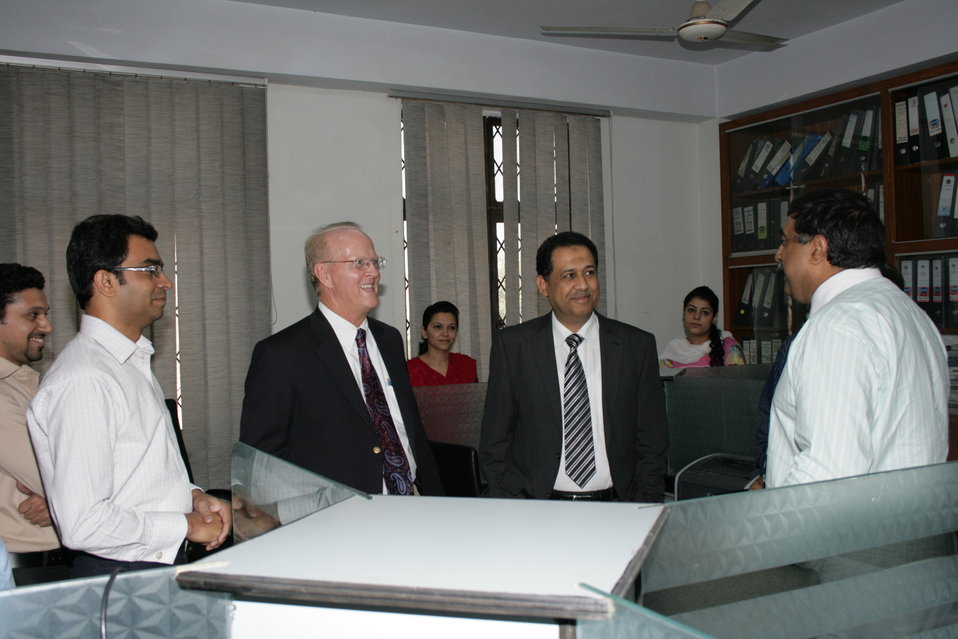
23 Dec - Accounting Manual Project' and the 'Enterprise resource planning (ERP) financial section

A delegation of USAID and IRG visited the finance directorate of Lahore Electric Supply Company (LESCO) to monitor the progress of the ‘Accounting Manual Project’ and learn more about ‘ERP Financials Section’. Mr. Abid Latif Lodhi Finance Director LESCO, along with his ERP team, shared the ‘ERP Implementation Strategy’ of LESCO and the current progress status of ERP Financials Implementation at all 79 accounting units of LESCO. Lessons learned from ERP implementation at LESCO will help in finalizing/documenting the guidelines for implementing ERP in other DISCOs under the Power Distribution Program.